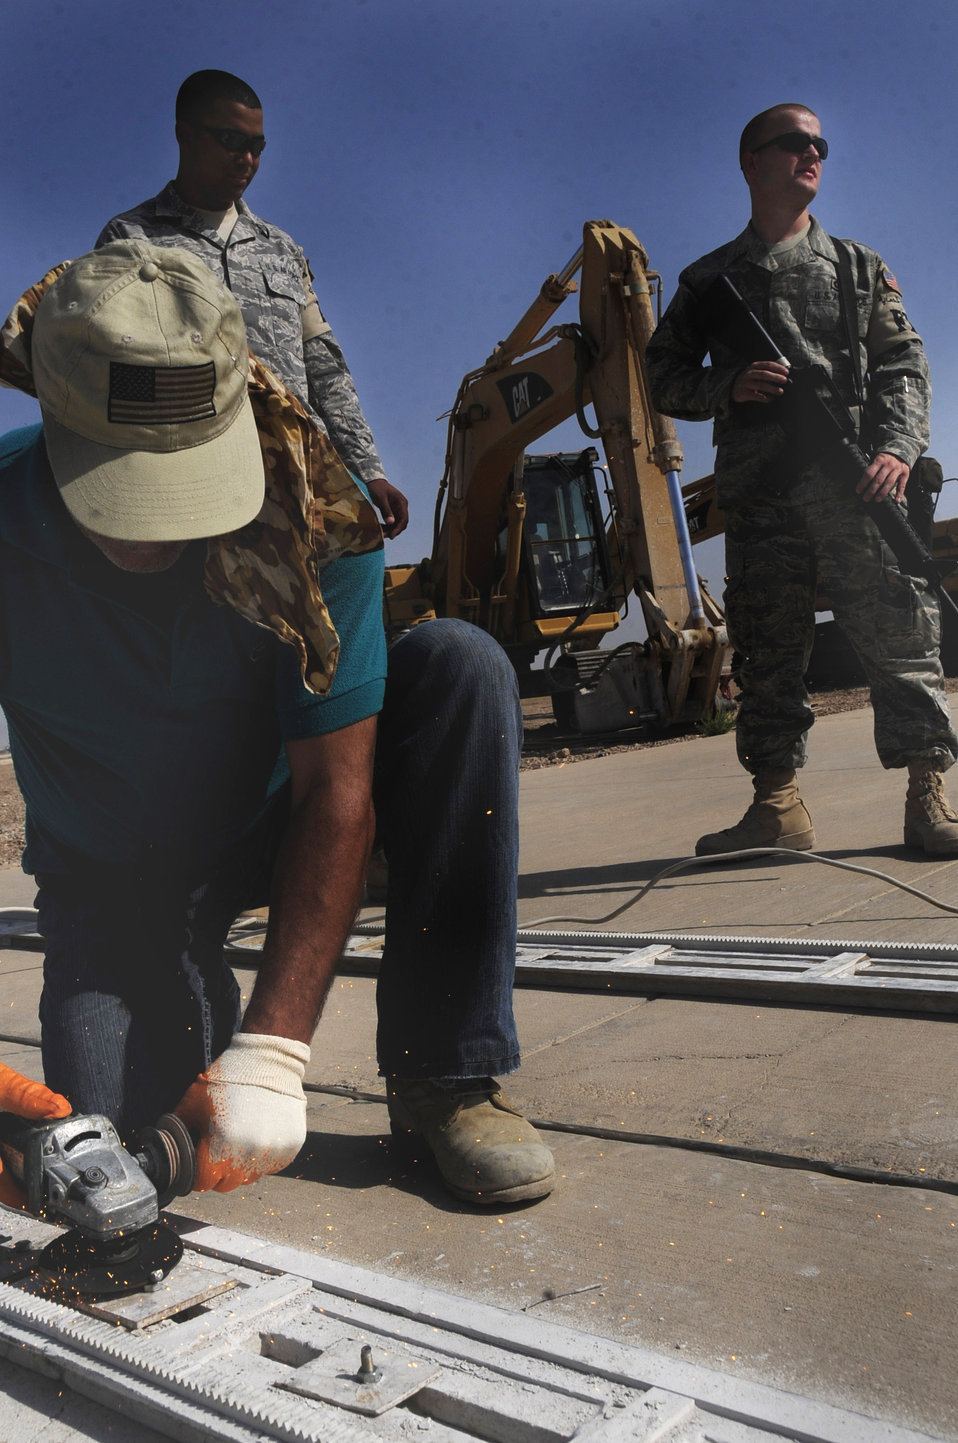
Laying Down the Force at Ali

Airman 1st Class Nathaniel Gonzalez and Airman 1st Class Lawrence Moore stand guard watching third country nationals here July 24. Airmen working in the 407th ESFS Force Protection Section are tasked with maintaining the installation's internal safety. Both Airmen are deployed from the 28th Bomb Wing, Ellsworth Air Force Base, S.D., where Airman Gonzalez works in aerospace propulsion and Airman Moore works as a wing postal clerk. Airmen Gonzalez and Moore are assigned to the 407th Expeditionary Security Forces Squadron.